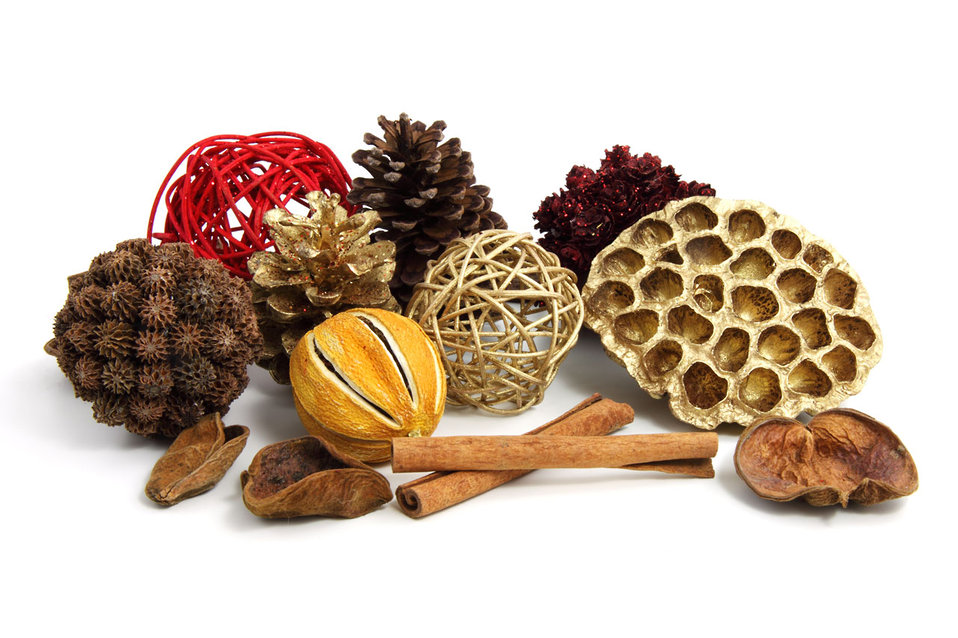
Pot pourri

Christmas pot pourri decoration on white background.